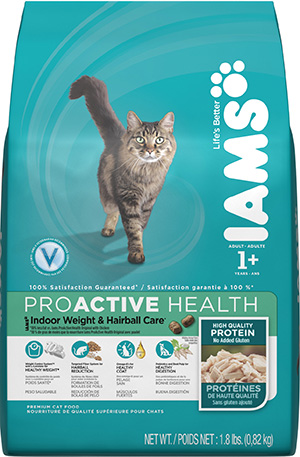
RECALLED – Dog and Cat foods - Dry

August 14, 2013 – Product Recall – P&G Voluntarily Recalls Limited Quantity of Dry Pet Food Due to Possible Health Risk.